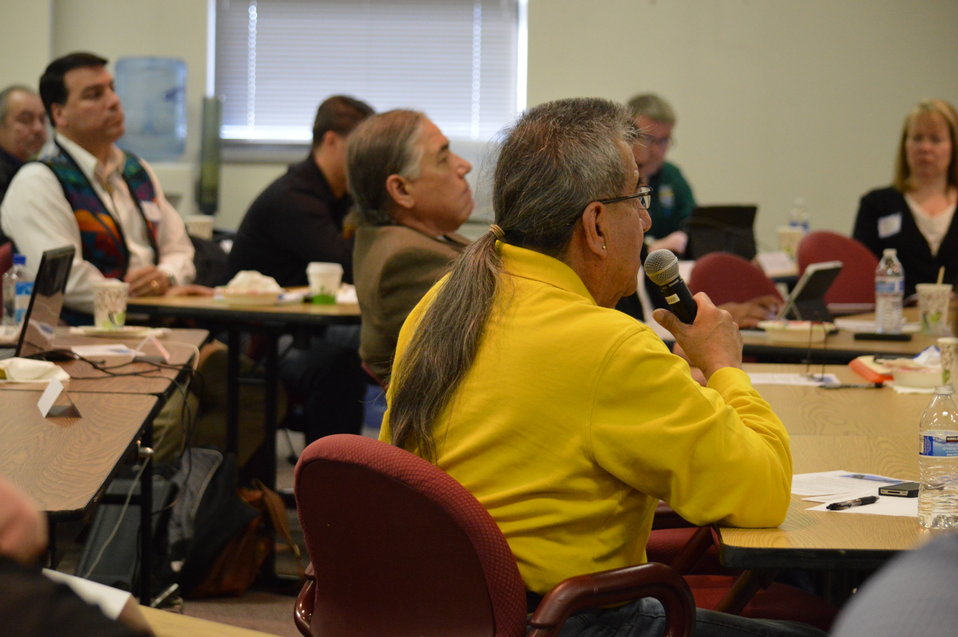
Discussion

Questions and comments are raised at the Eagle Summit III in Denver, Colorado on March 20, 2014 at the Rocky Mountain Arsenal National Wildlife Refuge.